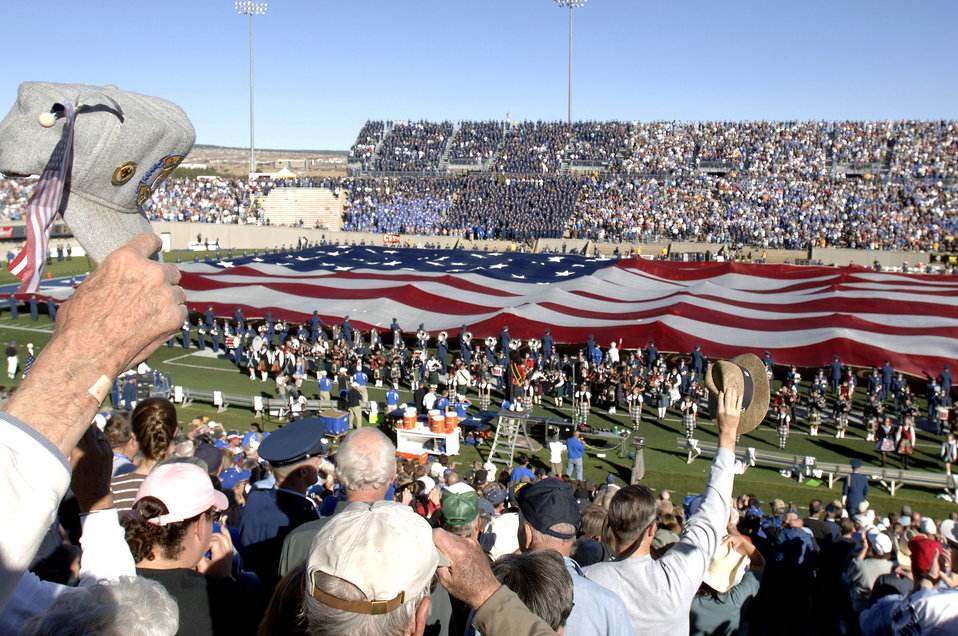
Football: Falcons ride record-breaker Hall over Army

The season-high, near capacity crowd of 46,144 reacts to the presentation of the Stars and Stripes by members of the Academy Cadet Wing during halftime of Air Force's 30-10 win over Army Nov. 3 at Falcon Stadium in Colorado.